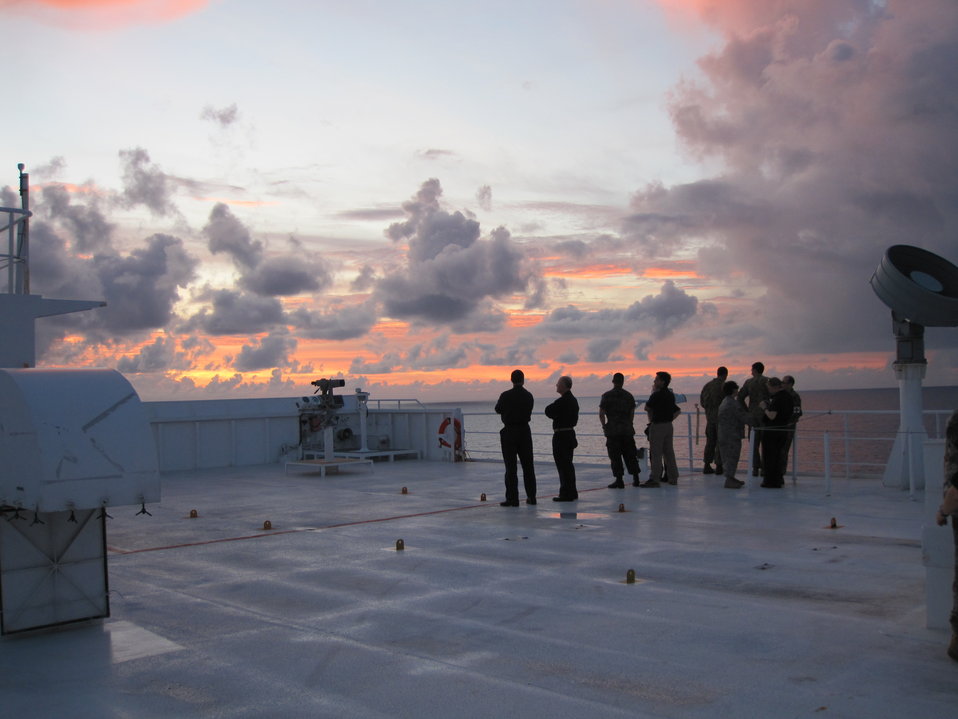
Military Personnel Stand on the Military Sealift Command hospital ship USNS Mercy's Deck

Foreign Service Liaison Officer Thomas Weinz captures a photo of military personnel at dusk on the Military Sealift Command hospital ship USNS Mercy (T-AH 19) on May 29, 2010, while transiting the Java Sea during Pacific Partnership 2010, the fifth in a series of annual U.S. Pacific Fleet humanitarian and civic assistance endeavors to strengthen regional partnerships.